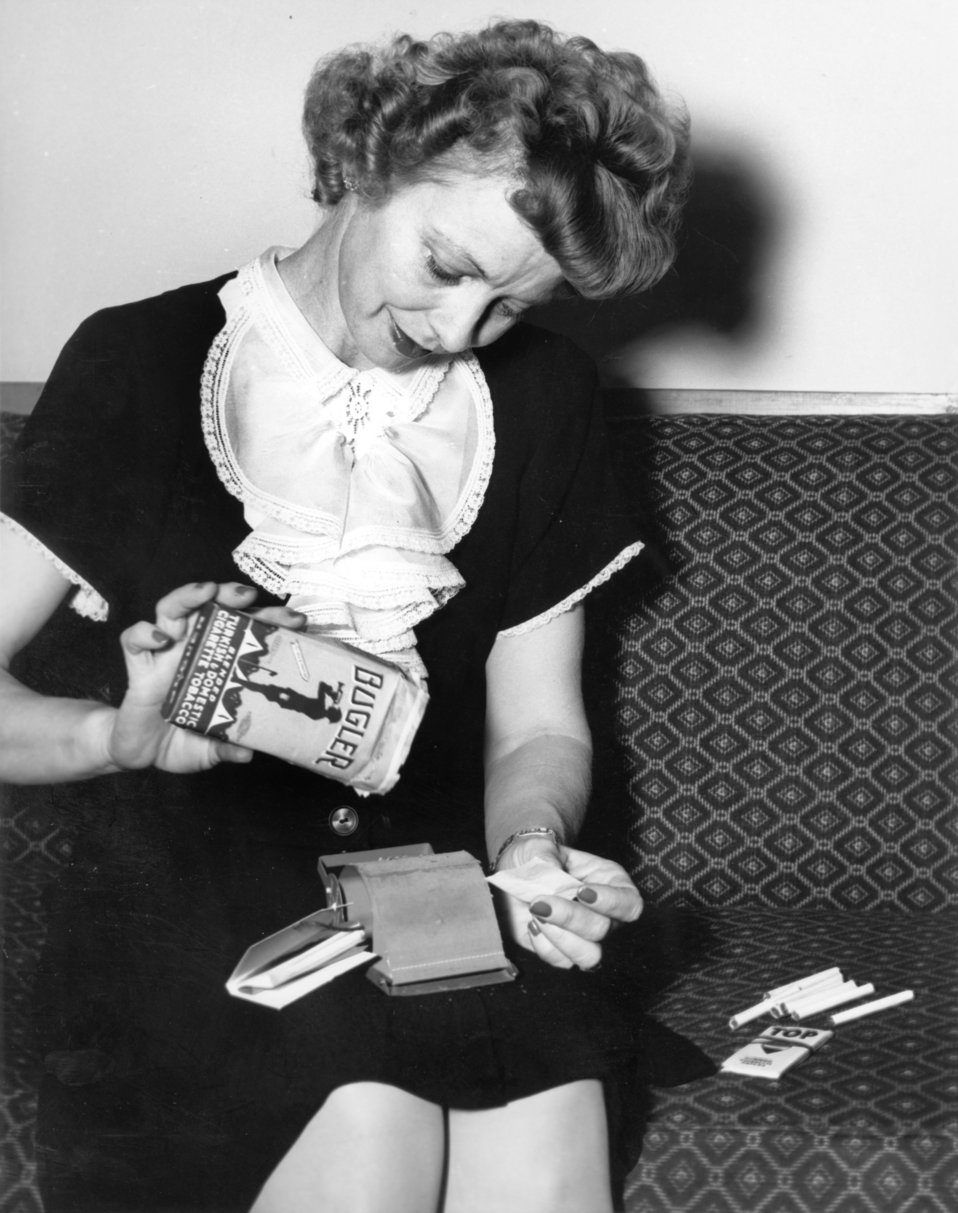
Rolling Her Our Cigarettes 1945 Oak Ridge

pro294 DOE photo Ed Westcott 2-15-1945 Lou Mitcheom Oak Ridge Tennessee